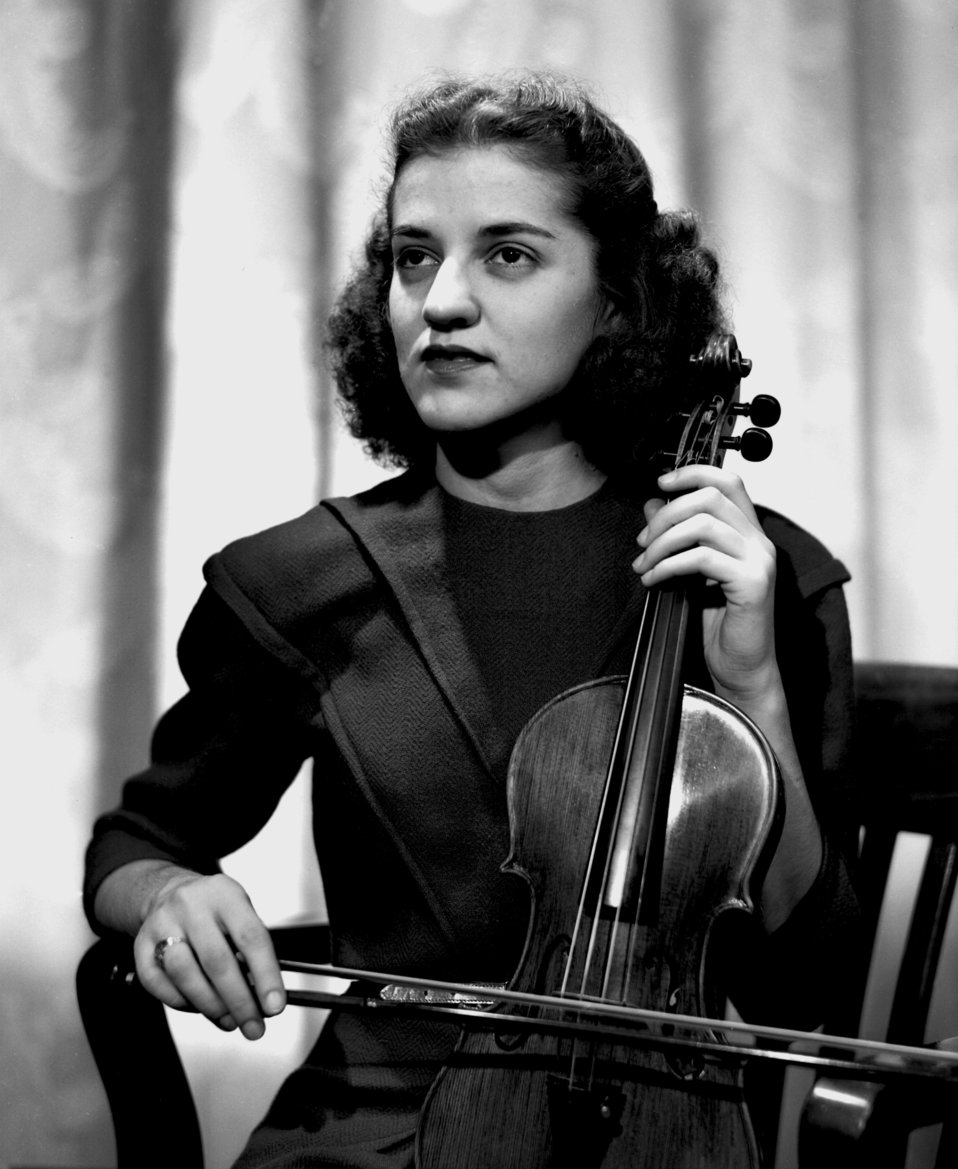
Charlotte Wayne Violinist Oak Ridge Symphony

3237-3 DOE photo Ed Westcott 1-15-1947 Oak Ridge Tennessee